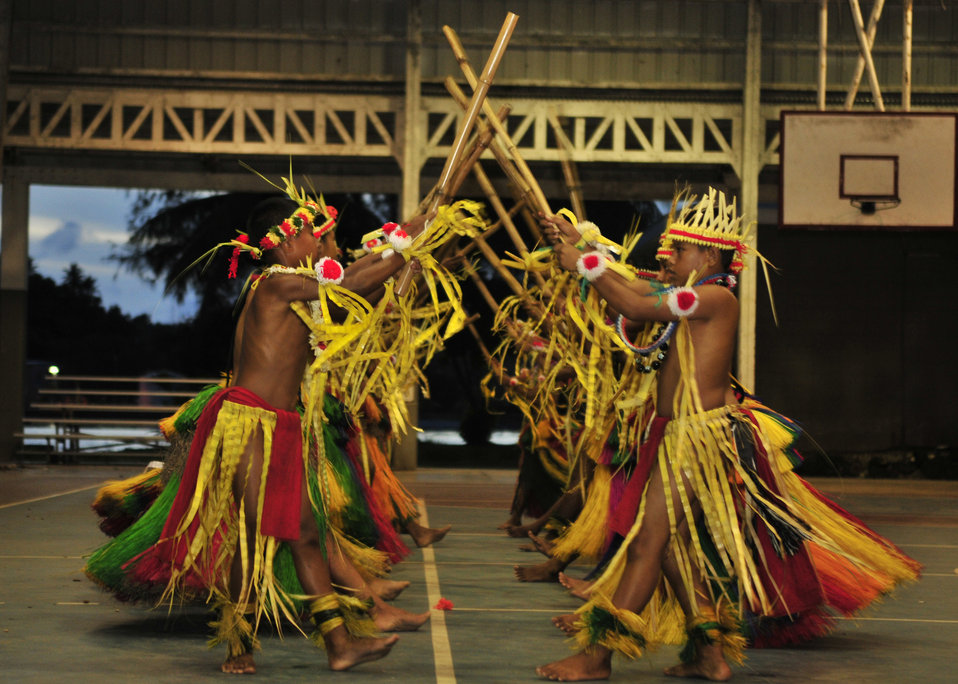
Micronesian school students perform a traditional Micronesian dance in Yap, Federated States of Micronesia, in July 2011.